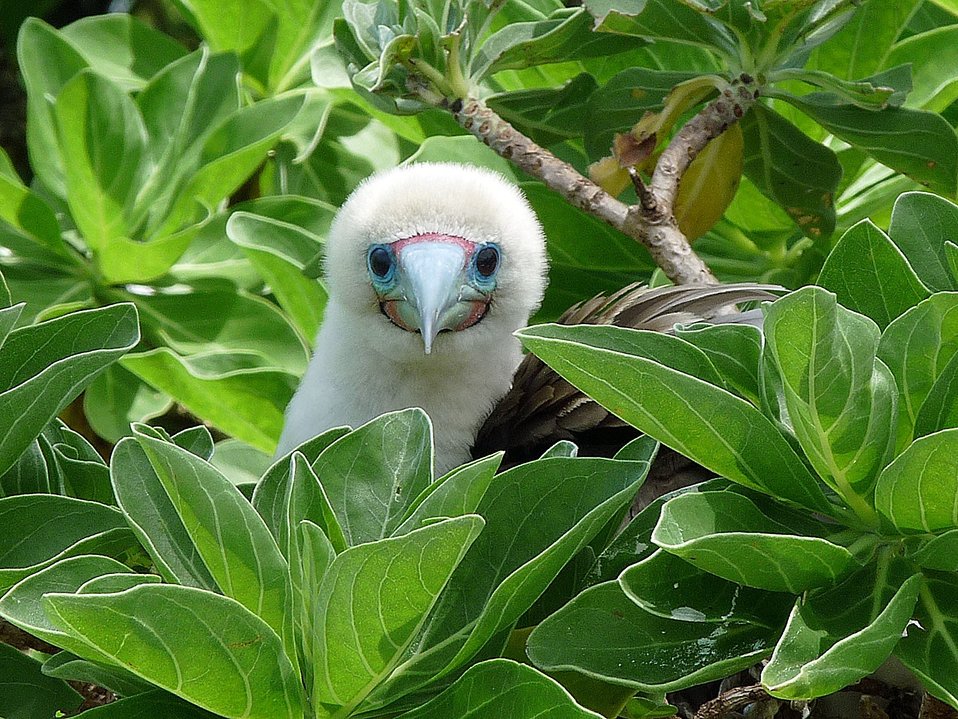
Red-footed booby at Palmyra Atoll NWR

A red-footed booby peers out of the foliage at Palmyra Atoll National Wildlife Refuge in the Pacific.